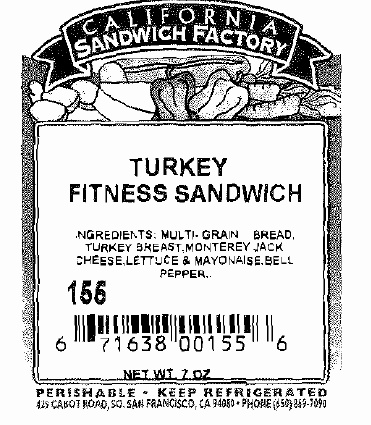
RECALLED - Sandwiches

April 12, 2011 - Product Recall - A-1 Sandwich Company Voluntarily Recalls Sandwiches with Undeclared Allergens.